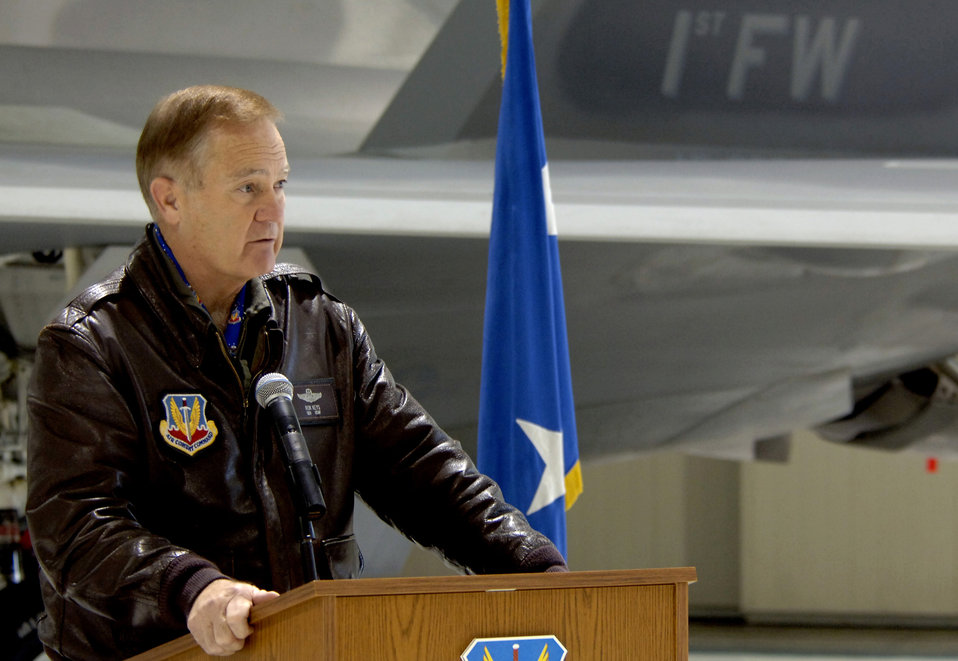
Combat ready Raptor

LANGLEY AIR FORCE BASE, Va. (AFPN) -- Gen. Ronald Keys answers questions during a press conference to announce the F-22A Raptor's initial operating capability today. General Keys is the commander of Air Combat Command.